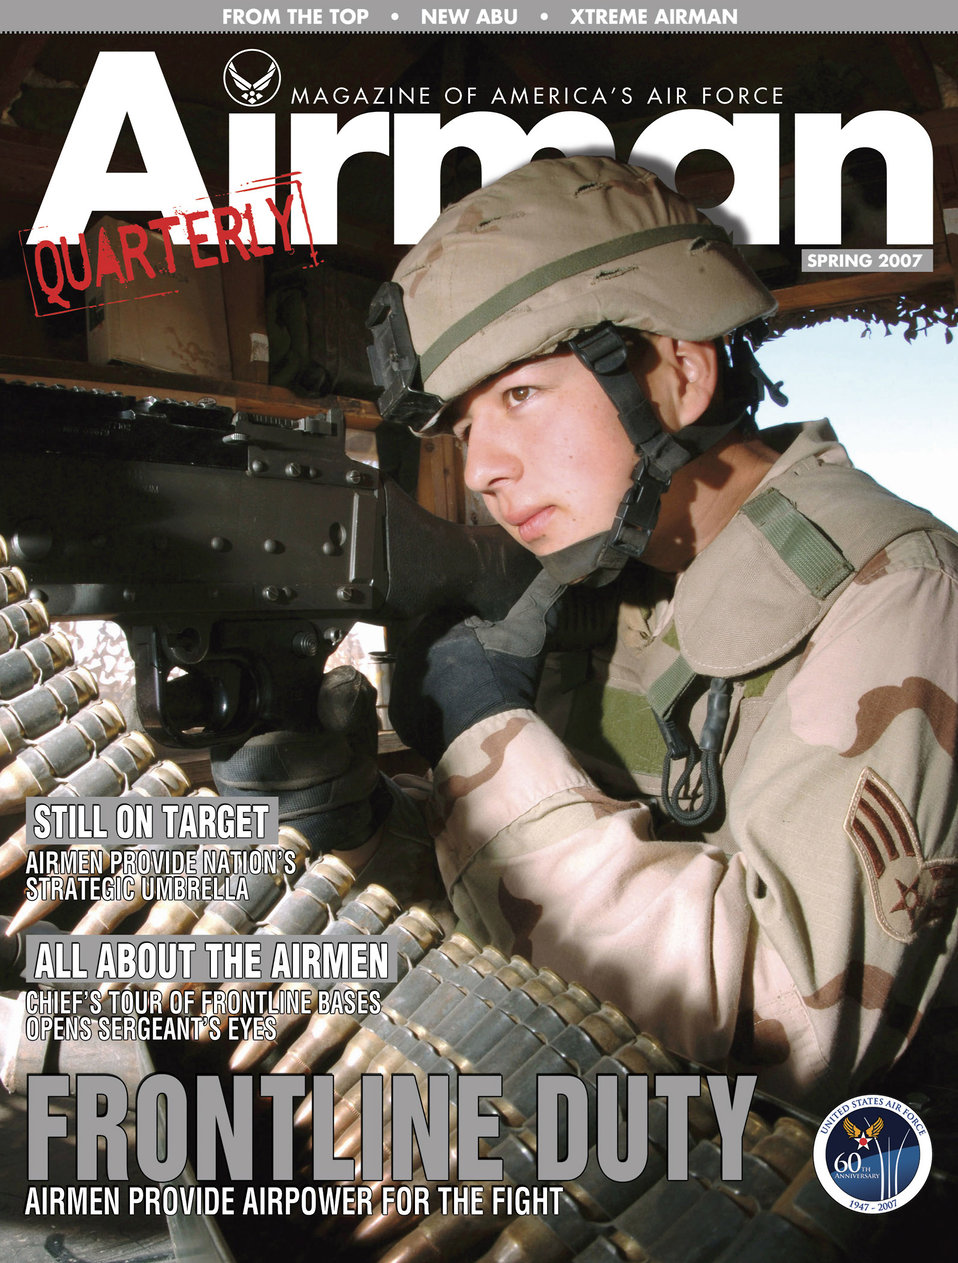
Spring 2007 Airman now available

The spring 2007 issue of Airman magazine is now available in print and online at http://www.af.mil/news/airman/.